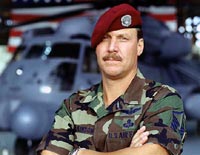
Tim Wilkinson

1990's -- HURLBURT FIELD, Fla. -- Master Sgt. Tim Wilkinson retired from the Air Force July 2001. He was assigned to the 720th Special Tactics Group, Hurlburt Field, Fla., as the superintendent of the personnel recovery. In 1993, he was awarded the Air Force Cross for actions in Somalia.